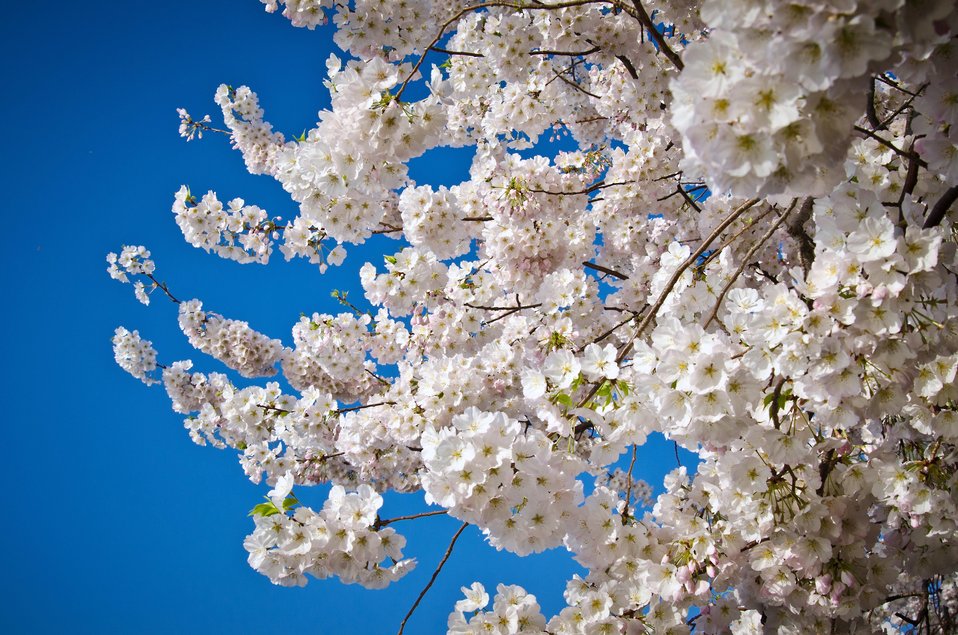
Cherry blossoms at the Tidal Basin in Washington, D.C., on Tuesday, March 20, 2012.